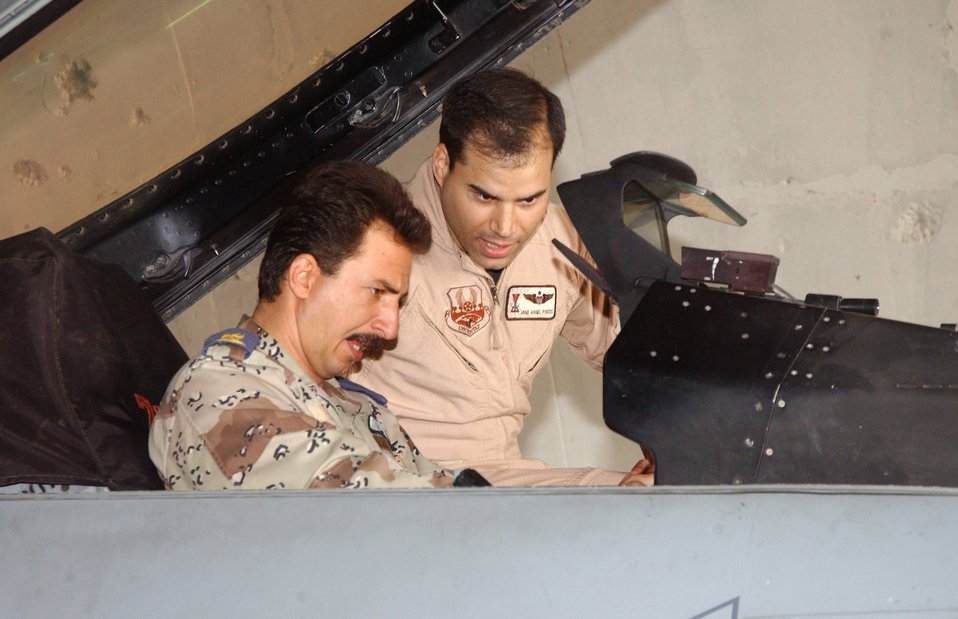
Iraqi pilot gets second look at F-16

BALAD AIR BASE, Iraq -- Iraqi air force Maj. Salam Shalaam discusses the cockpit layout of an F-16 Fighting Falcon with Maj. Jose Pinedo, of the 421st Expeditionary Fighter Squadron here.